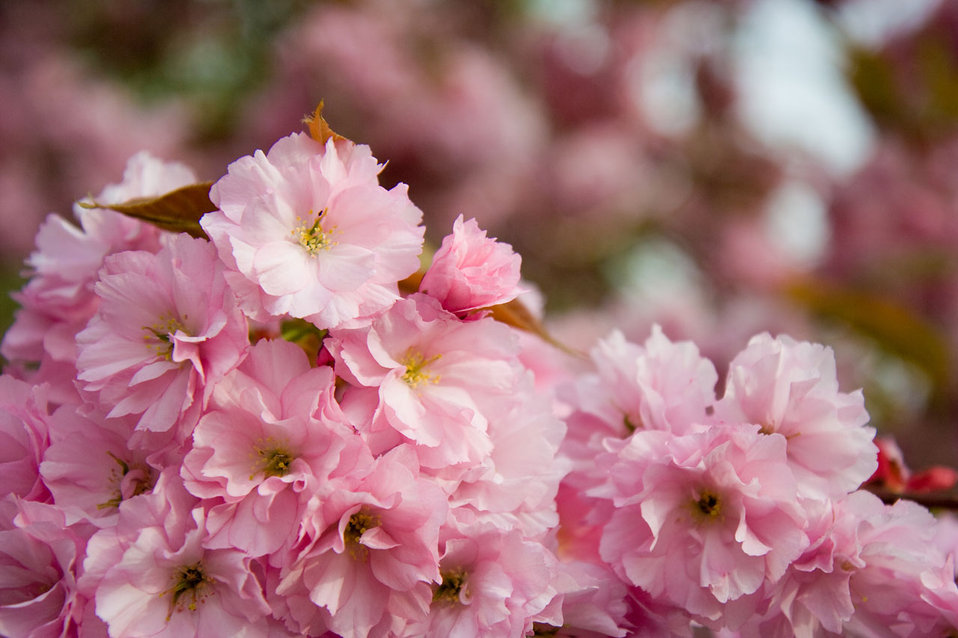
Sakura tree in blossom.